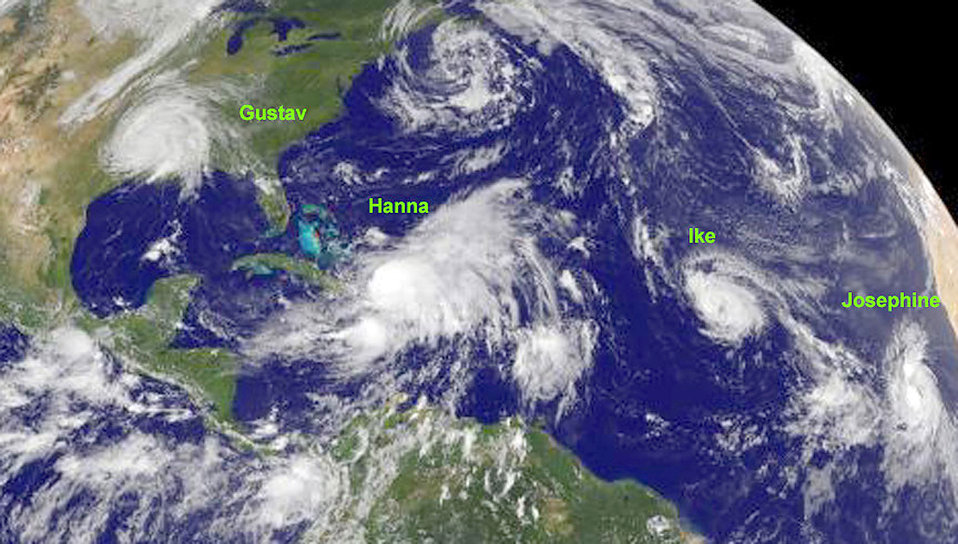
September 02, 2008Tropical Storm Josephine Forms in Far Eastern Atlantic